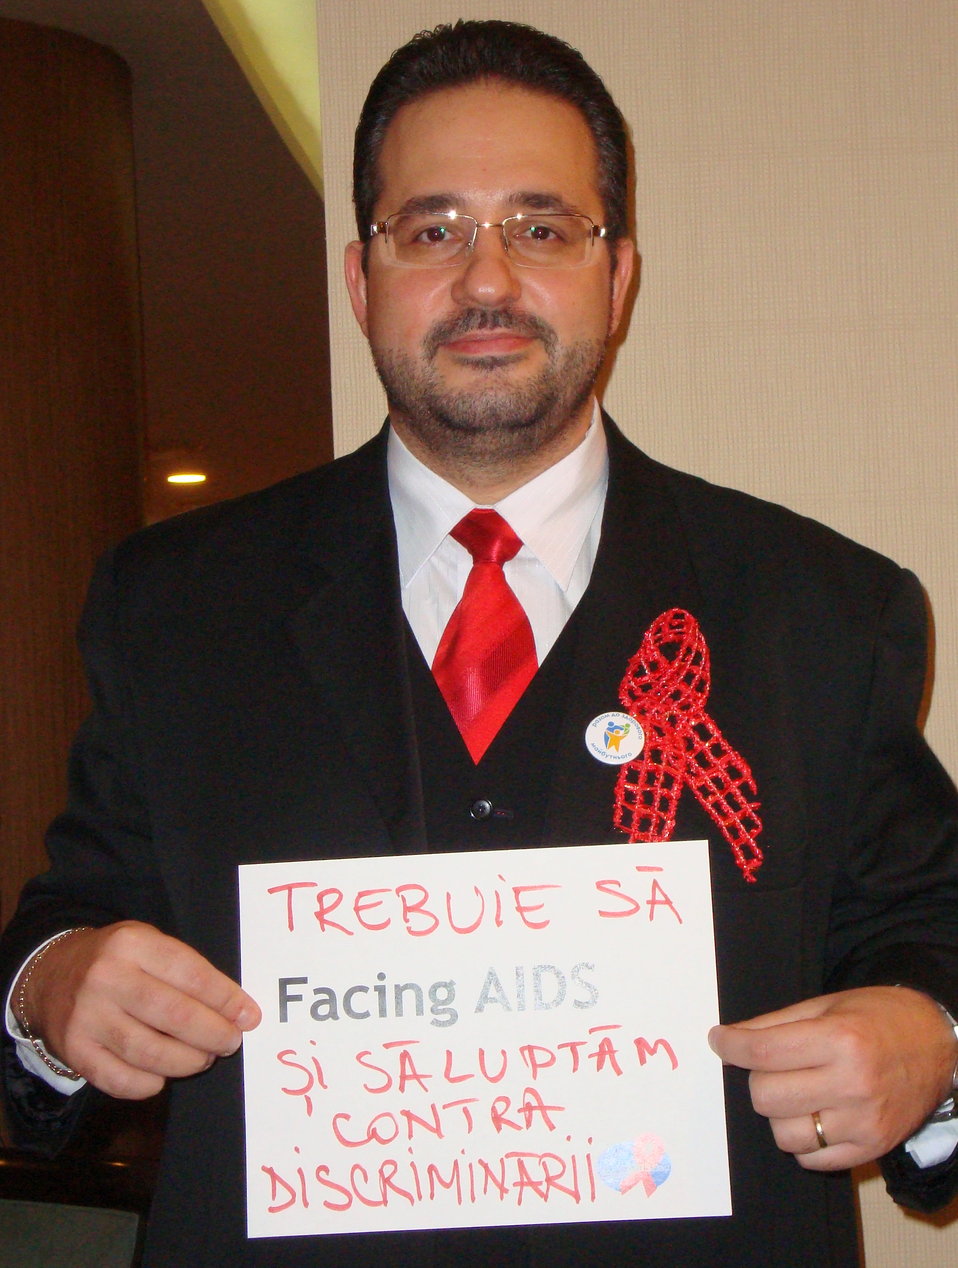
FacingAIDSCampaign 048